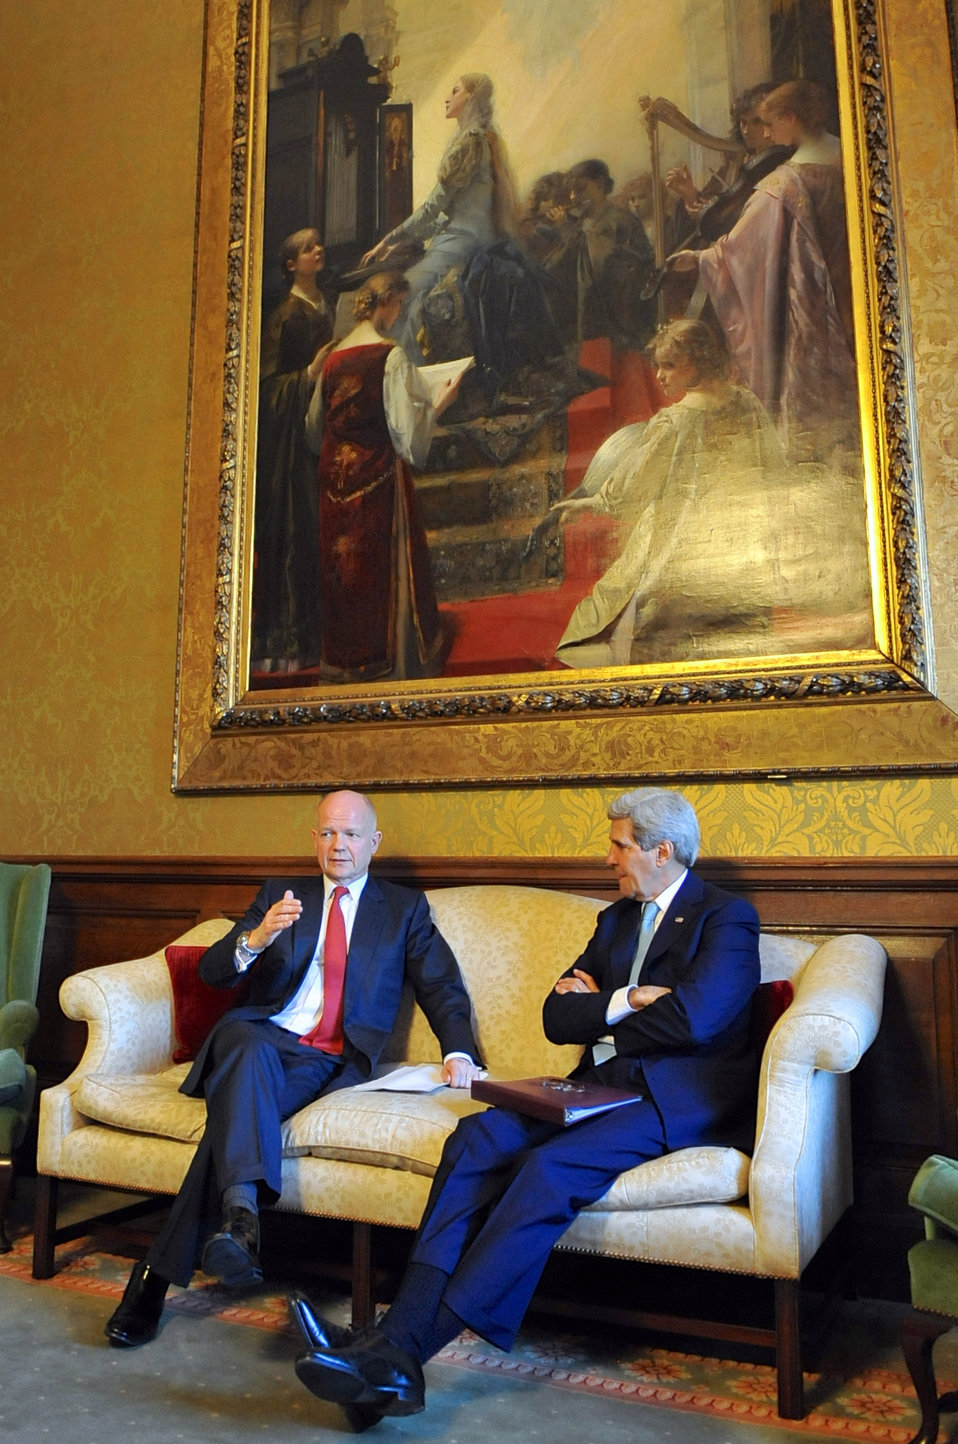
British Foreign Secretary Hague Chats With Secretary Kerry Before News Conference

British Foreign Secretary William Hague chats with U.S. Secretary of State John Kerry between their appearances at back-to-back news conferences in London on May 15, 2014.